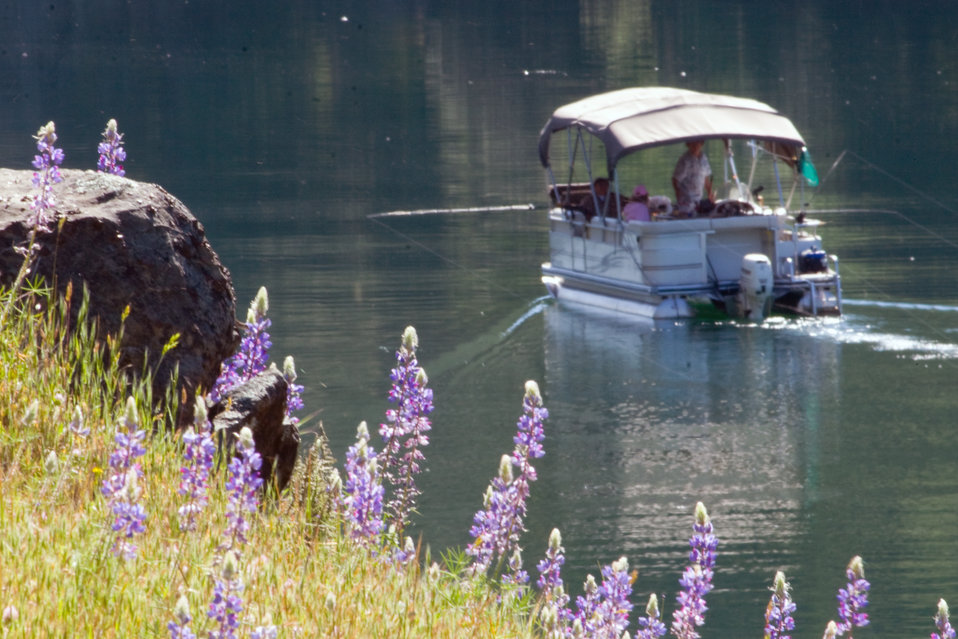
Englebright Lake

Boating, fishing and boat-in camping are some of the recreational opportunities at Englebright Lake near Marysville, Calif., shown on April 22, 2009. Formed by Englebright Dam the lake is 9 miles long with a surface area of 815 acres, an elevation of 527 feet and 24 miles of shoreline. Completed by the U.S. Army Corps of Engineers Sacramento District in 1941, the dam was authorized by Congress for the storage of hydraulic gold mining debris on the Yuba River. The concrete arch dam spans 1,142 feet across and is 260 feet high. The lake and dam are managed by the Sacramento District.